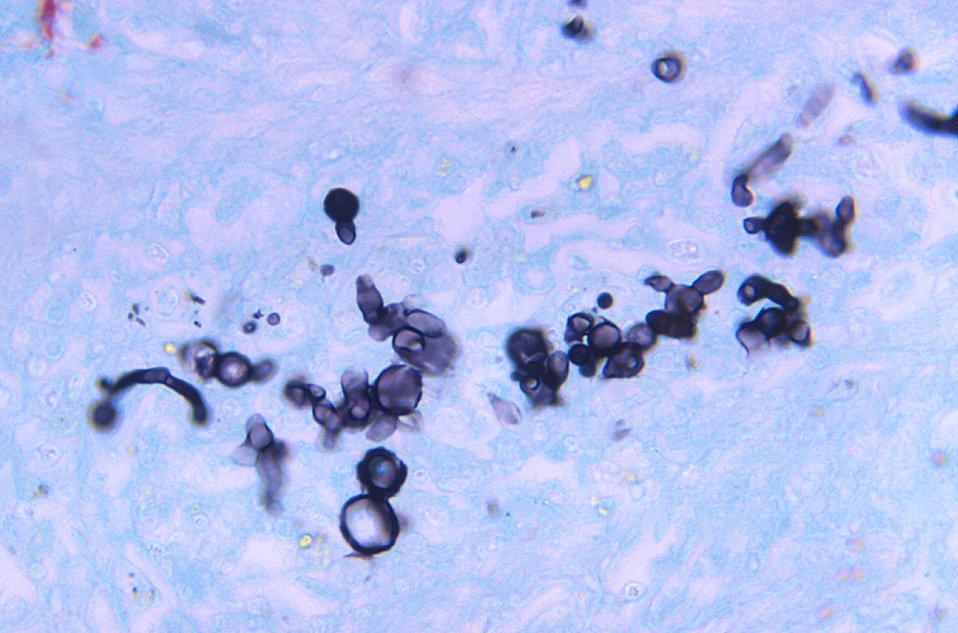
Magnified 500X, this Gamori-stained photomicrograph of a canine liver tissue specimen, revealed the presence of budding Blastomyces dermatitidis fungal cells of various sizes. Note the accompanying filaments, or mycelium.What is blastomycosis?